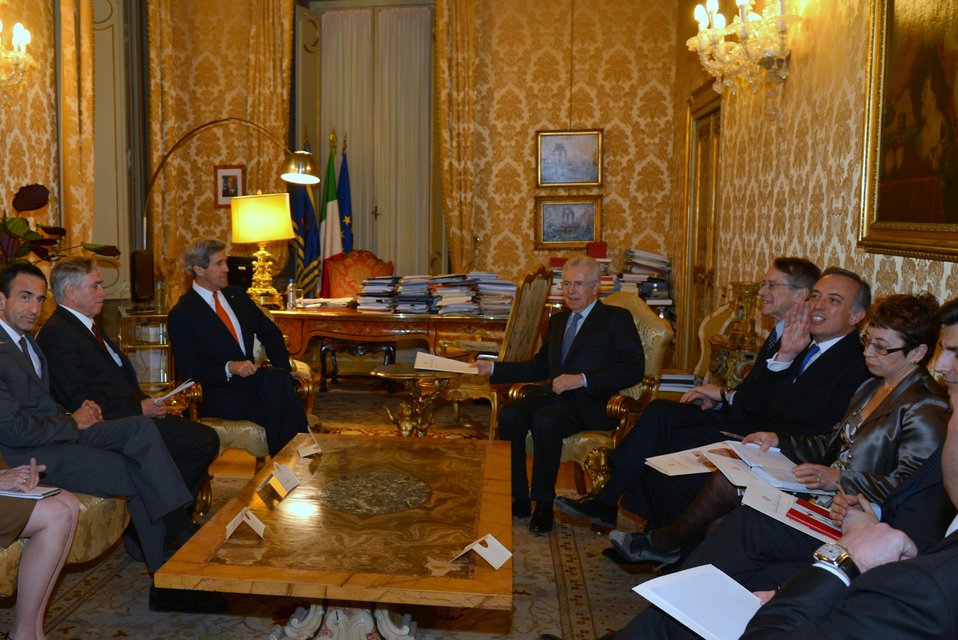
Secretary Kerry Meets With Italian Prime Minister Monti

U.S. Secretary of State John Kerry meets with Italian Prime Minister Mario Monti in Rome, Italy, on February 28, 2013.